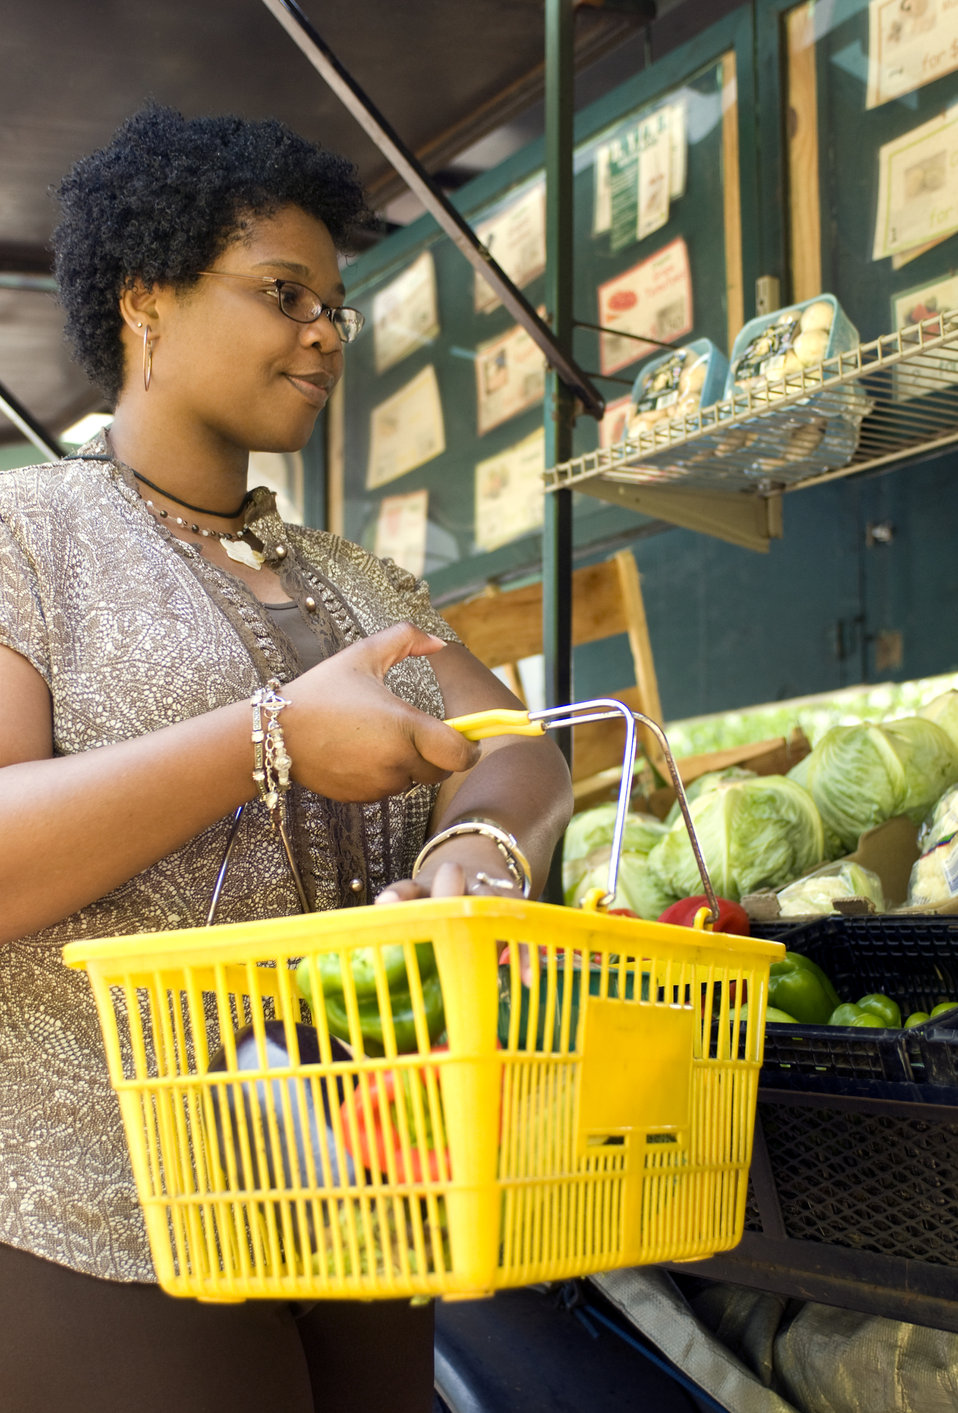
This photograph depicts a woman shopping at a mobile produce market, making healthy food choices from an array of fresh fruits and vegetables. Here she was shown placing a green bell pepper into a yellow plastic basket, which she carried by its handles in her right hand.